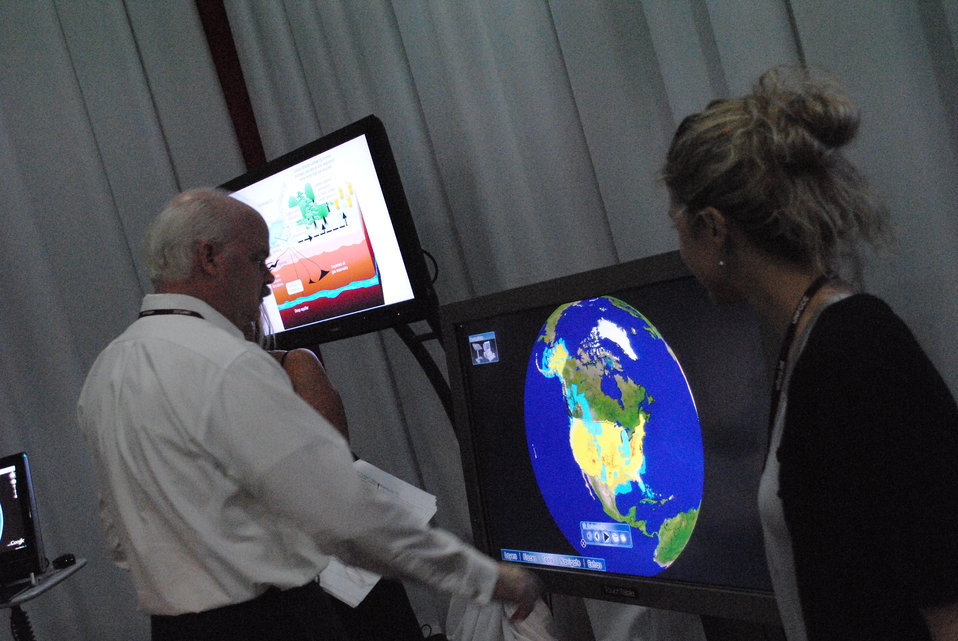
Behind the Scenes: Dave Jones Initiates the Touch Table

Behind the Scenes: Dave Jones, President and CEO of Storm Center Communications, Inc., and Sarah Goldfarb, DipNote's Associate Editor, prepare the U.S. Center at COP-16 in Cancun, Mexico, for the morning activities on December 1, 2010.